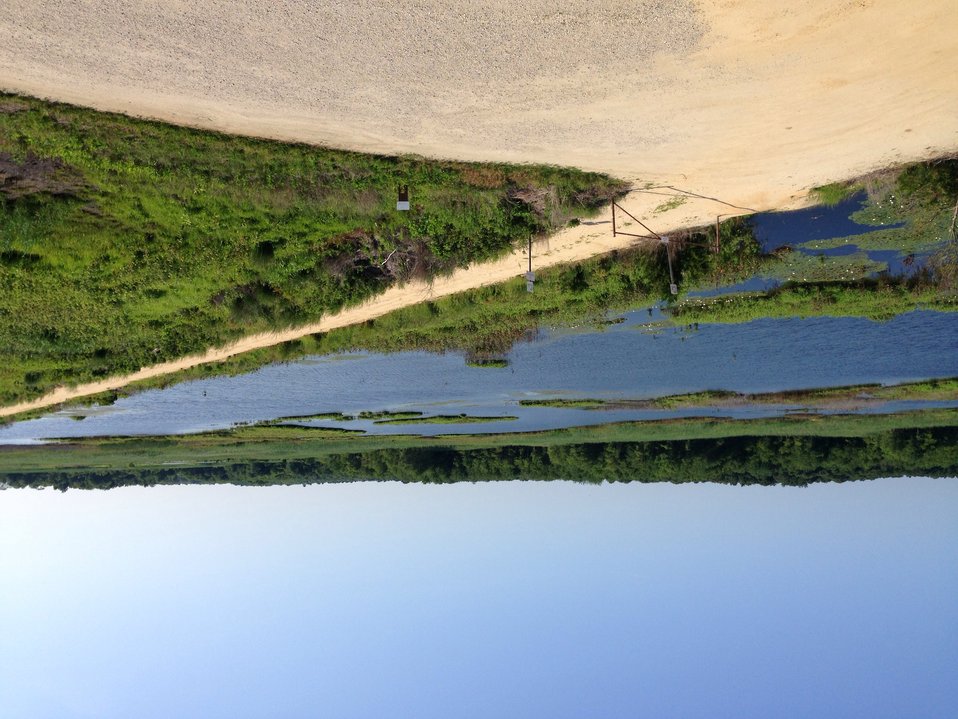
Forsythe wildlife drive after hurricane repairs

View from Gull Pond Tower looking northwest.